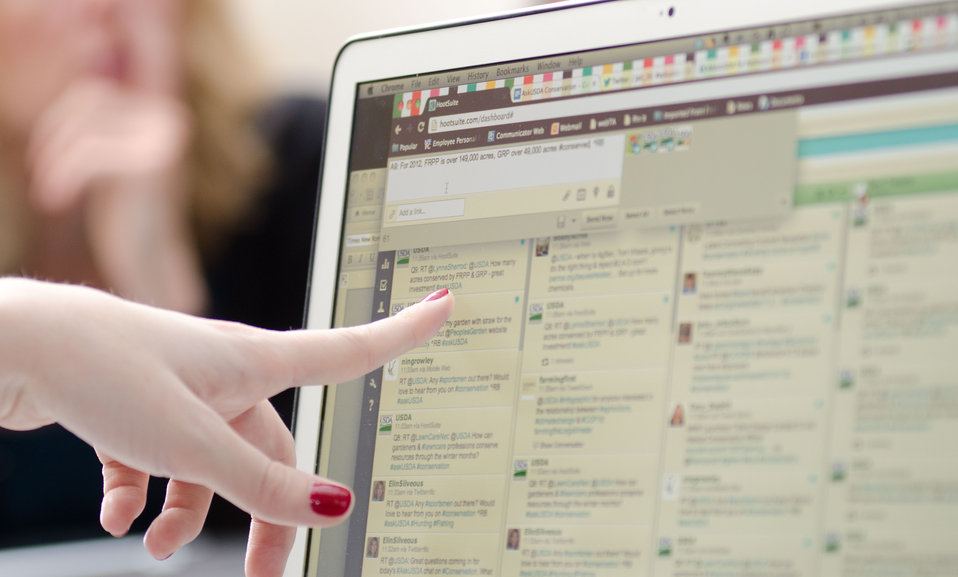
U.S. Department of Agriculture Office of Communications Director of Web Communications Amanda Eamich points to one of many questions from participatnts in a live Virtual Office Hours session on Twitter, in Washington, D.C. on Thursday, November 29, 2012. This event provided a public question and answer opportunity, and it highlighted the U.S. Department of Agriculture's (USDA) record on conservation achievements and efforts to reconnect Americans to the great outdoors were answered during the event. Questions were submitted live and in advance to the @USDA Twitter account using the hashtag #AskUSDA.